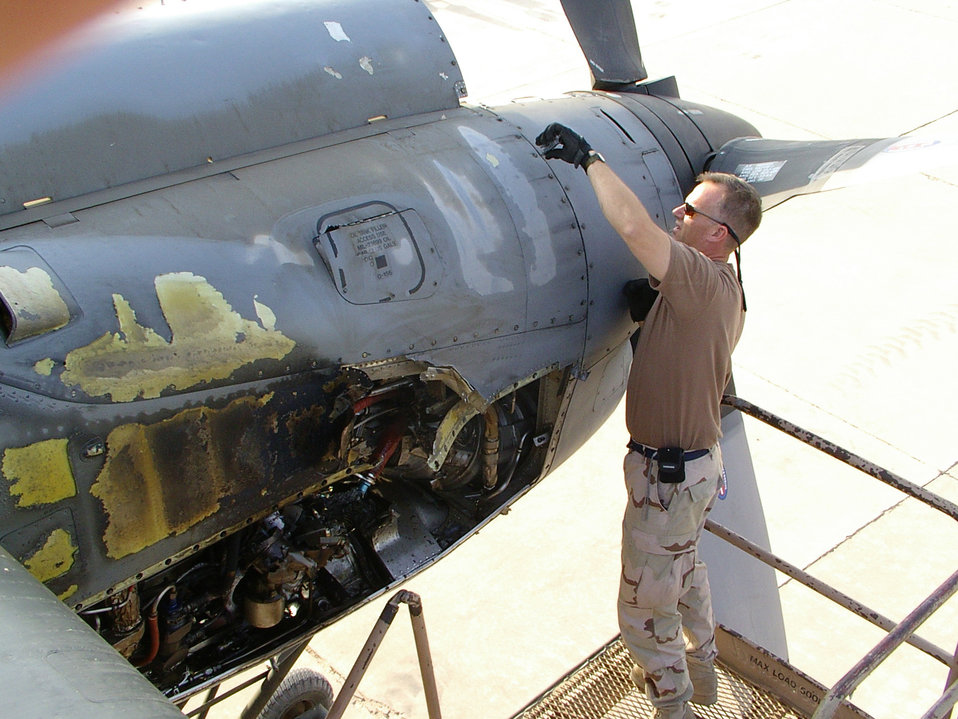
Team deploys to recover damaged aircraft

SOUTHWEST ASIA -- Tech Sgt. Paul Okon begins removing a panel on a battle-damaged C-130 Hercules engine at a forward-deployed location in northern Iraq. Sergeant Okon and other members of a maintenance recovery team from the 386th Expeditionary Maintenance Group deployed to replace the engine after it was it by enemy ground fire.